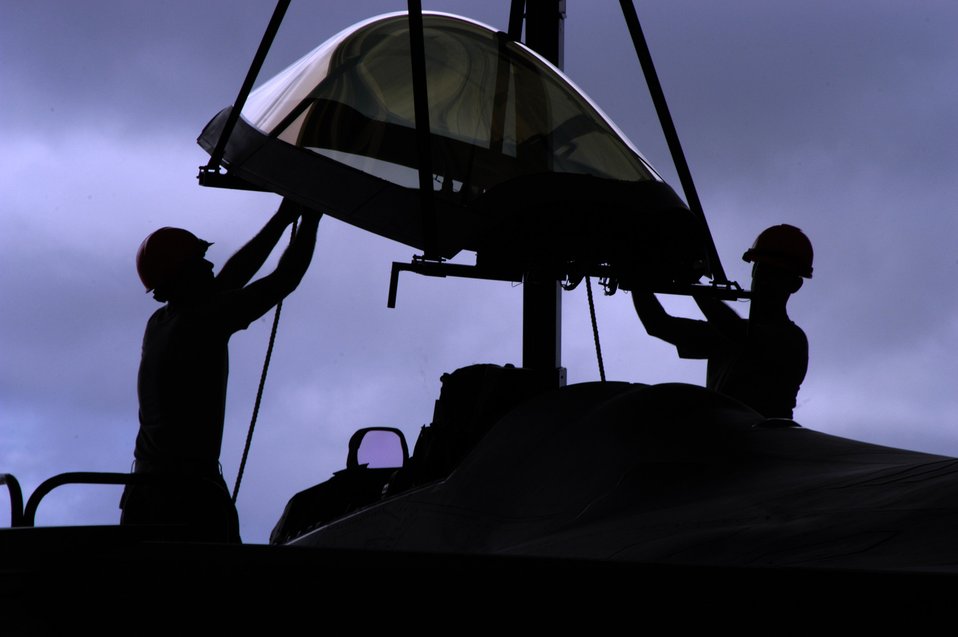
Egress technicians keep raptor pilots covered

Senior Airman Ryan Ott and Staff Sgt. Tim Sullivan guide a canopy onto an F-22 Raptor at Andersen Air Force Base Feb. 18. Members of the 90th Expeditionary Fighter Squadron and the 36th Expeditionary Maintenance are deployed out of Elmendorf AFB, Alaska, with more than 250 Airmen in support of the Pacific theater security package. Sergeant Sullivan and Airman Ott are 36th Expeditionary Maintenance Squadron F-22 egress and systems specialists.